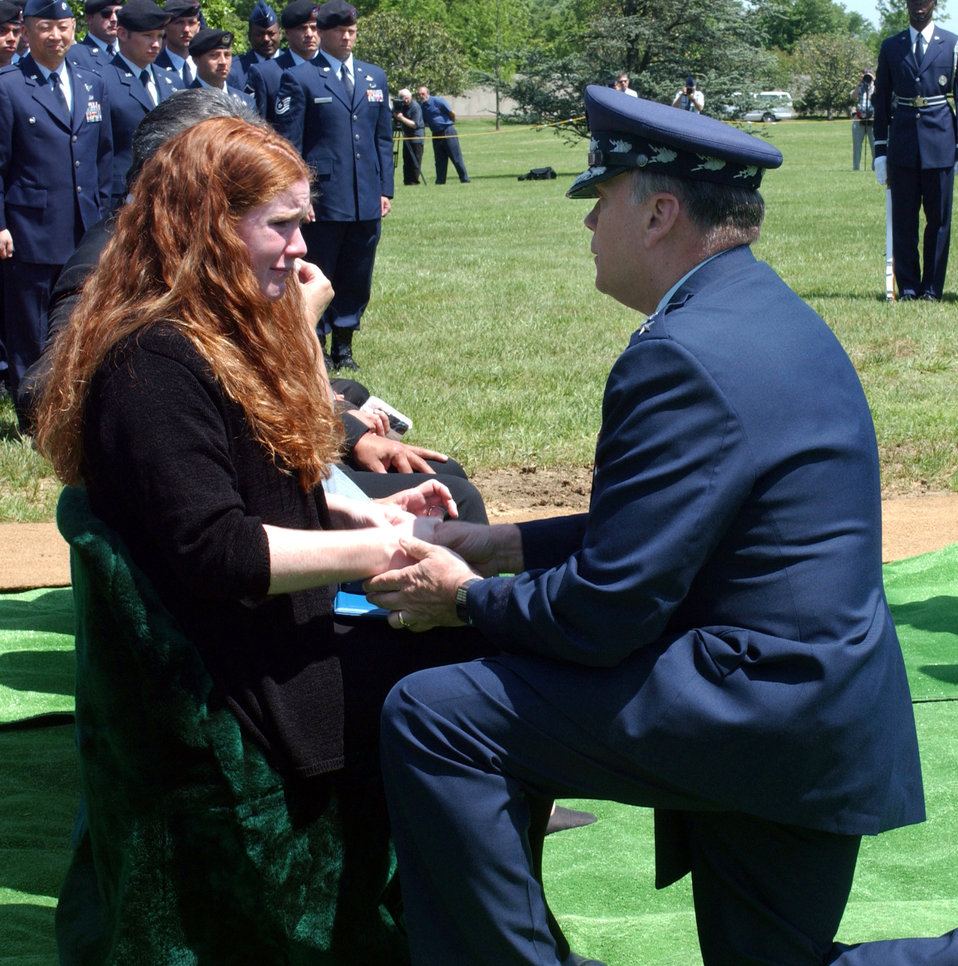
On behalf of a grateful Air Force

ARLINGTON, Va. -- Air Force Chief of Staff Gen. John Jumper consoles Sarah following her husband's funeral at Arlington National Cemetery here May 14. Airman 1st Class Raymond Losano, 24, was killed April 25 during a firefight in Afghanistan near the Pakistan border. He was a tactical air command and control specialist assigned to the 14th Air Support Operation Squadron at Pope Air Force Base, N.C.